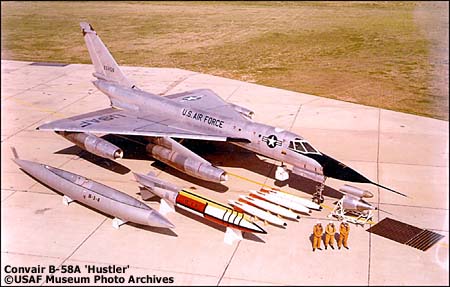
B-58 Hustler

1950's -- A B-58 Hustler. Courtesy photo.